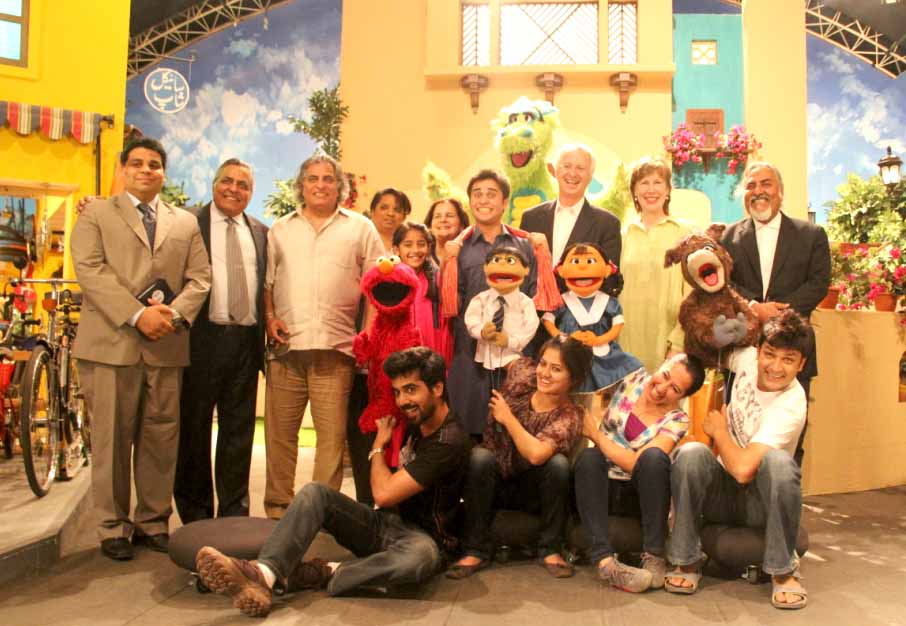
U.S. Ambassador’s Visit to Sim Sim Hamara Highlights U.S. Commitment to Improved Children’s Education in Pakistan at Lahore on 28 April, 2012

Usman Peerzada, Cameron Munter and his wife Dr. Marliyn Wyatt group photo with the artist & team of the sim sim hamara